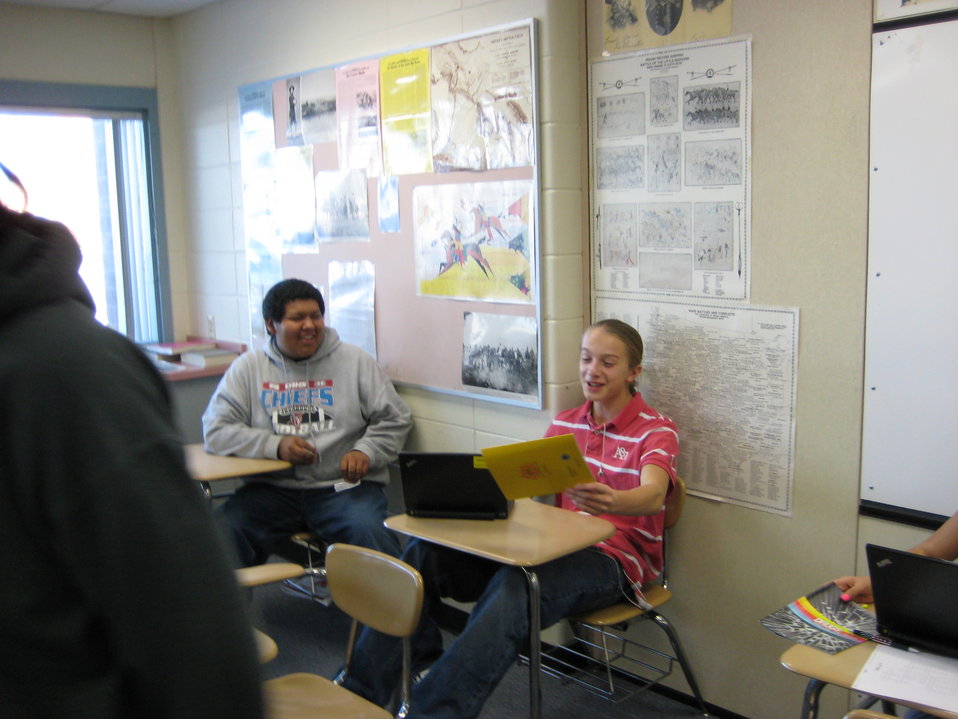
Wyoming Indian High School students read the Shatter the Myths booklet.